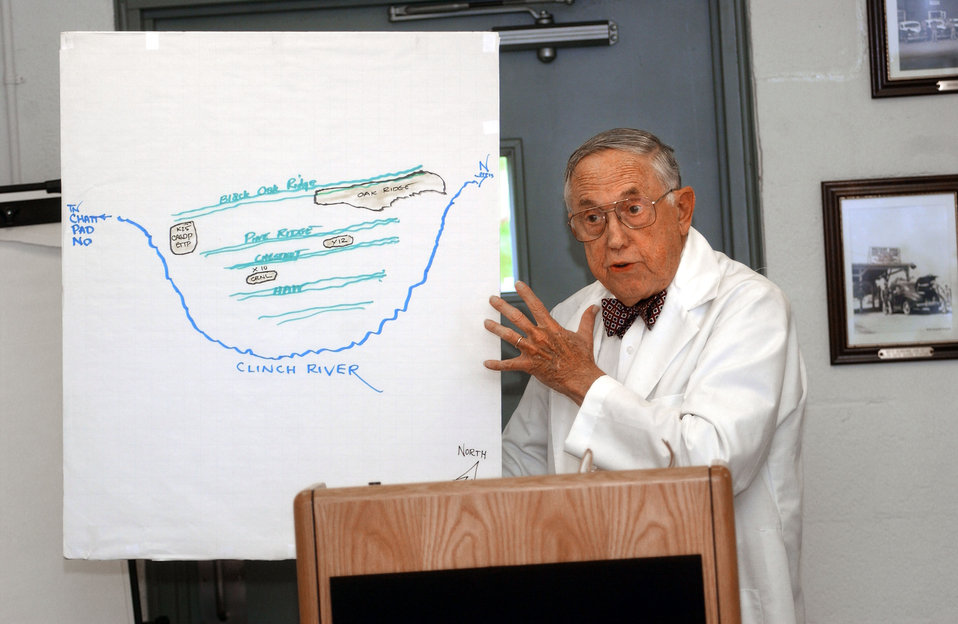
Bill Wilcox Lecturing to Visitors in a Oak Ridge Guard House 2003

03-094 DOE photo Lynn Freeny 5-17-2003 Oak Ridge Tennessee